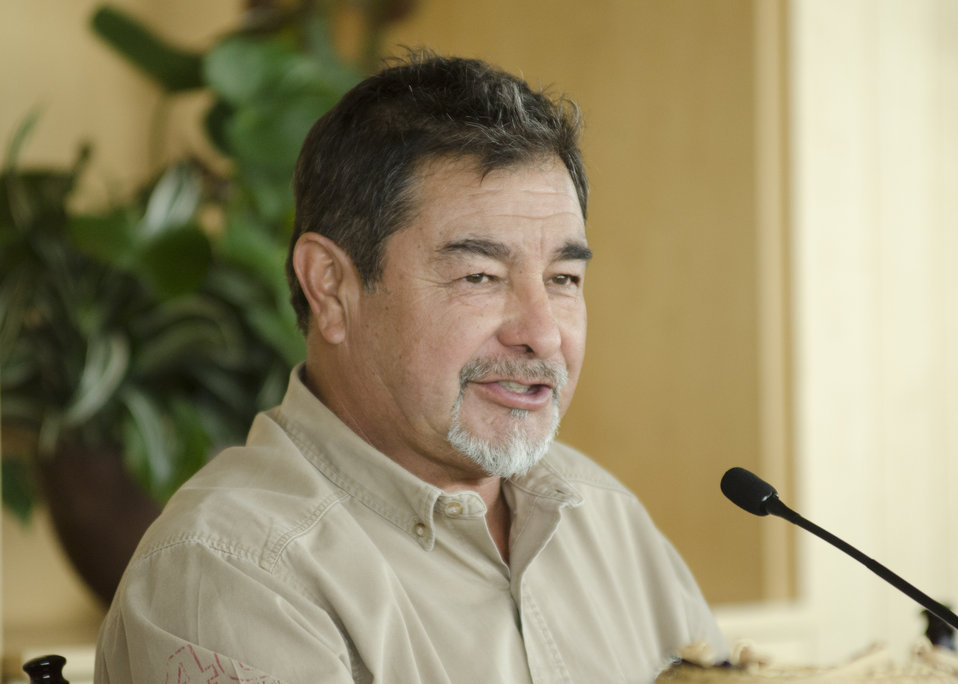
Farmer/Rancher of the Soboba Band of Luiseno Indians in Banning, CA., Edward Soza speaks at the closing session of the first business meeting of the U.S. Department of Agriculture’s (USDA) Council for Native American Farming and Ranching (CNAFR) held at the National Museum of the American Indian in Washington, D.C., on Wednesday, Aug. 15, 2012. CNAFR was created to advise the Secretary on ways to eliminate barriers to participation for Native American Farmers and Ranchers in USDA programs. The Council was established as part of the Keepseagle settlement, and is conducted under the oversight of USDA's Office of Tribal Relations under the Office of the Secretary of Agriculture.